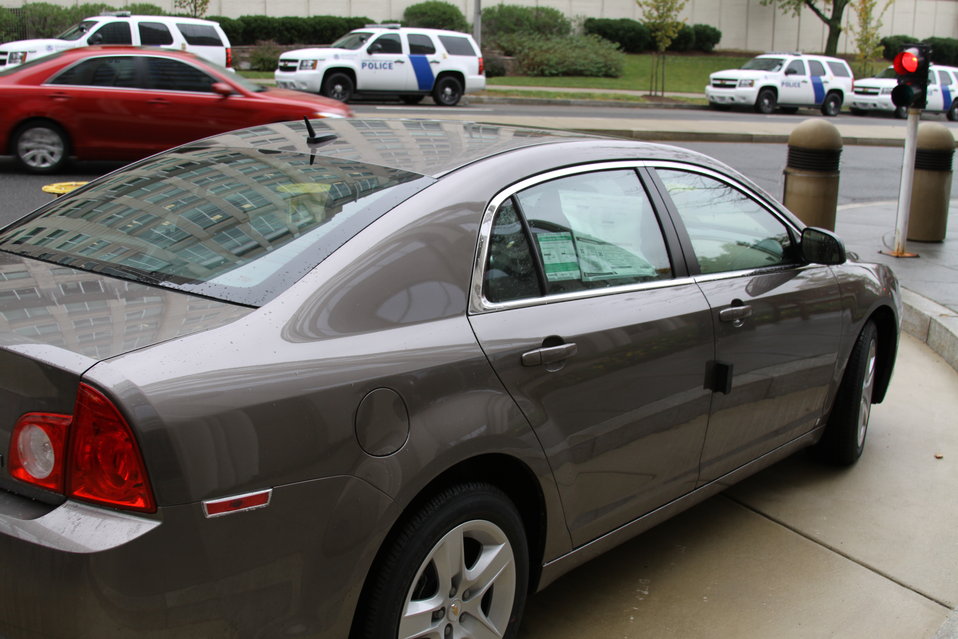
FCC Official Vehicle Tour